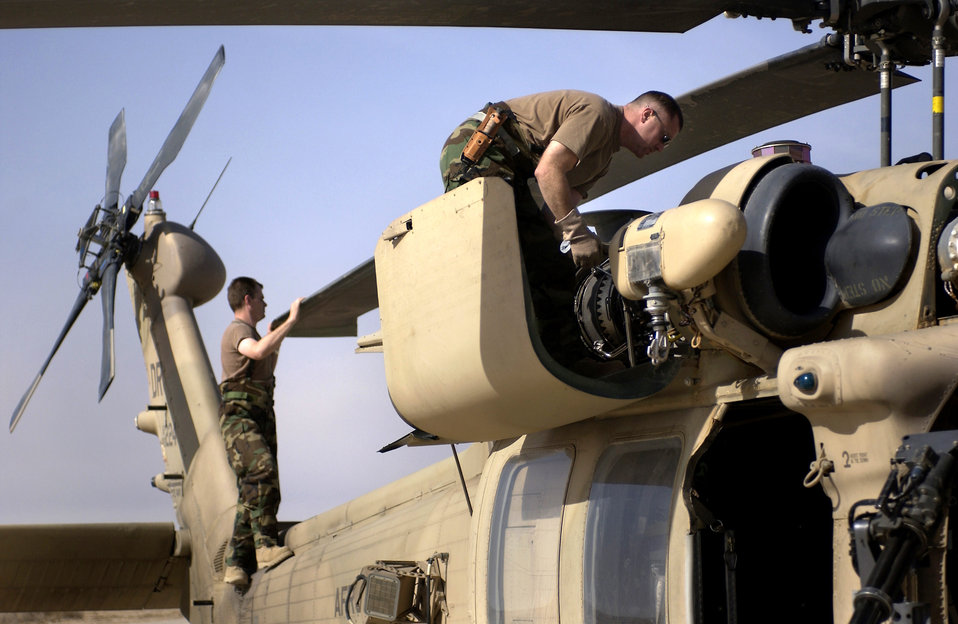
Post-flight inspection

OPERATION IRAQI FREEDOM -- Tech Sgts. Leroy Stromenger (left) and Matthew English, both crew chiefs from the 301st Rescue Squadron, conduct a post flight inspection on their HH-60 helicopter at a forward deployed location in southern Iraq.